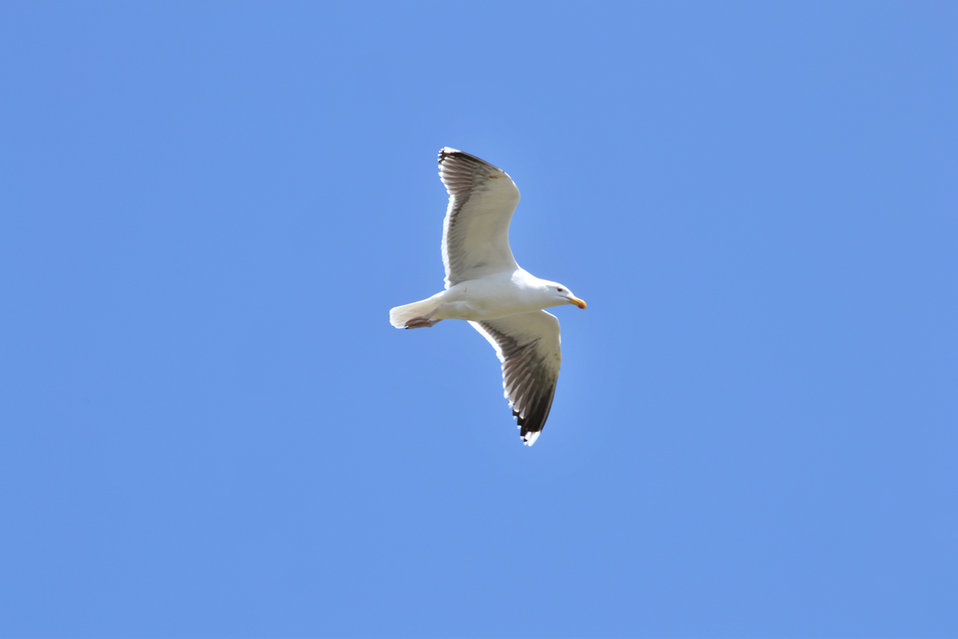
Gull on wing

Thacher Island National Wildlife Refuge, MA.